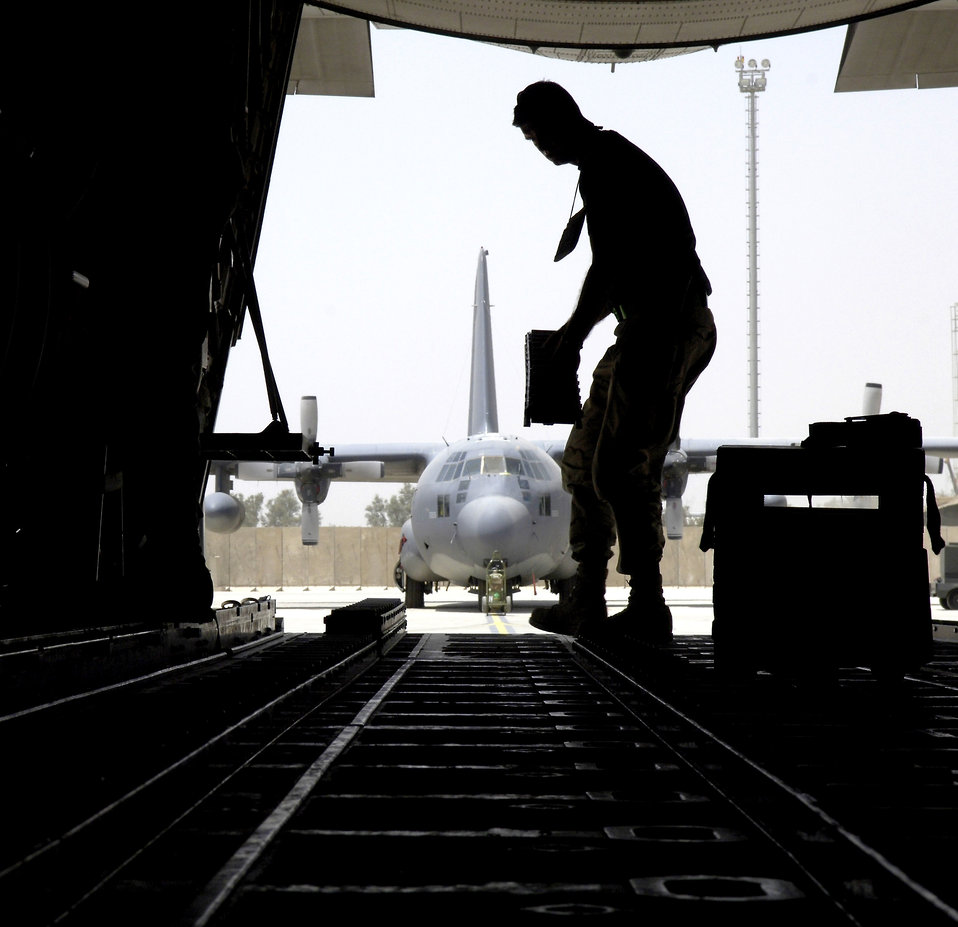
Maintenance unit keeps aircraft flying

Tech. Sgt. Sean Fox changes the cargo roller configuration on a C-130 Hercules at Balad Air Base, Iraq, on May 16, 2006. Sergeant Fox is a maintainer in the 777th Expeditionary Aircraft Squadron deployed from Little Rock Air Force Base, Ark.. The airfield is the busiest single-runway airfield in the Department of Defense. Since January 2006, the squadron's active-duty, Guard and Reserve Airmen have launched more than 3,700 sorties that carried some 54,200 people and 11,790 tons of cargo.